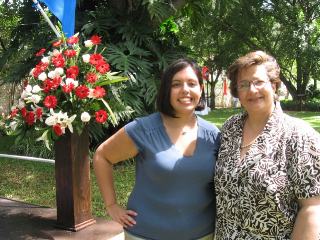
July 4th Celebration at U.S. Embassy in Honduras

Junior Officer and MC Natalia Almaguer and Cultural Specialist Carmen Urcuyo relax before the show at the U.S. Independence Day celebration at the U.S. Ambassador to Honduras’ residence in Tegucigalpa, Honduras, on July 2, 2010.